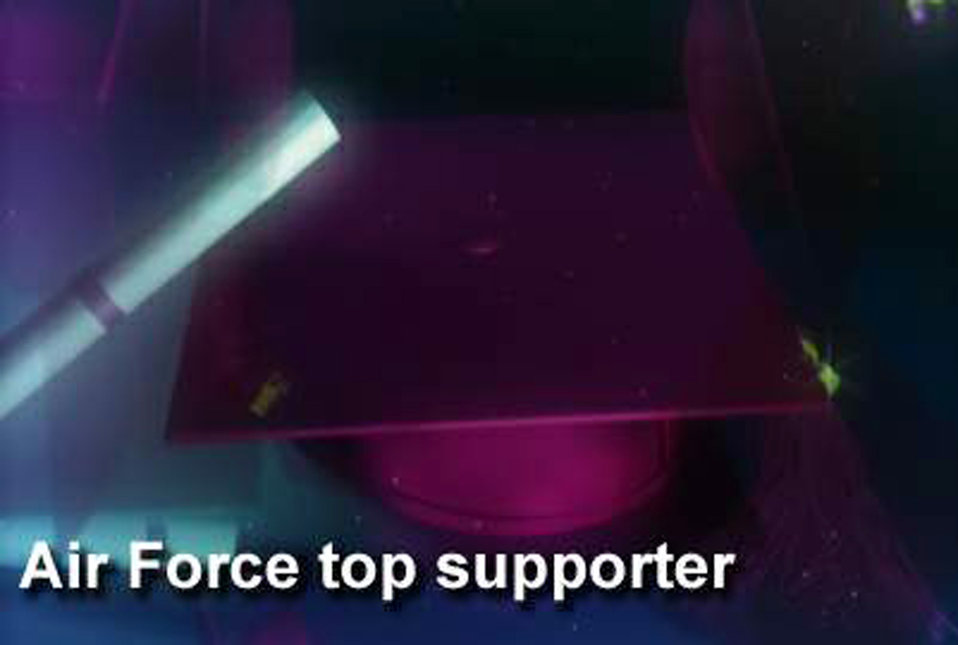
Air Force named among top HBCU supporters

In a 2009 survey, U.S. Black Engineer and Information Technology magazine recently named the Air Force among the